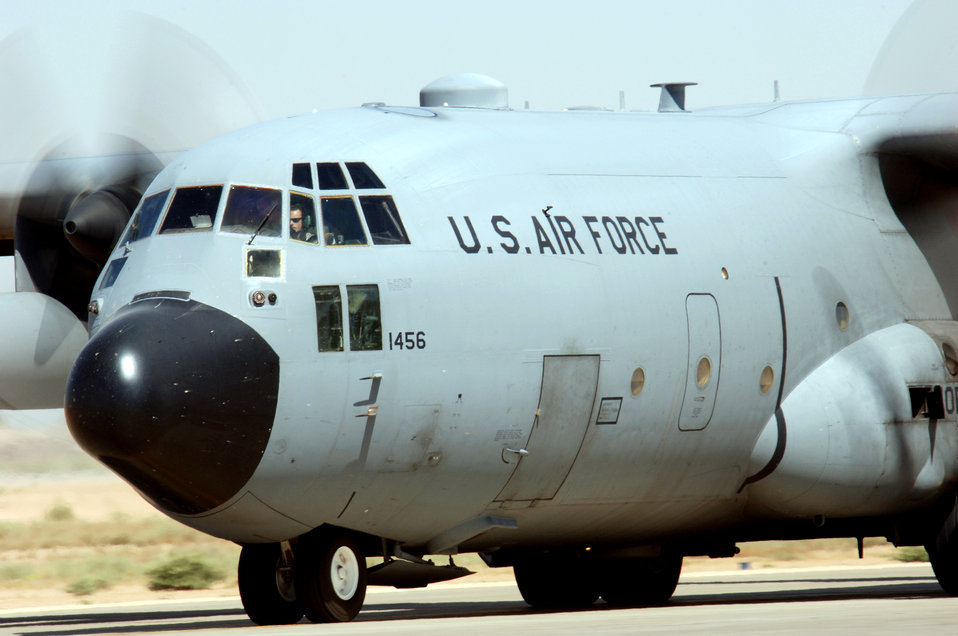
Flying missions support Operation Iraqi Freedom

A C-130 Hercules taxis at Balad Air Base, Iraq, after an Operation Iraqi Freedom mission on Monday, June 12. The C-130 is deployed from the North Carolina Air National Guard's 145th Airlift Wing in Charlotte.